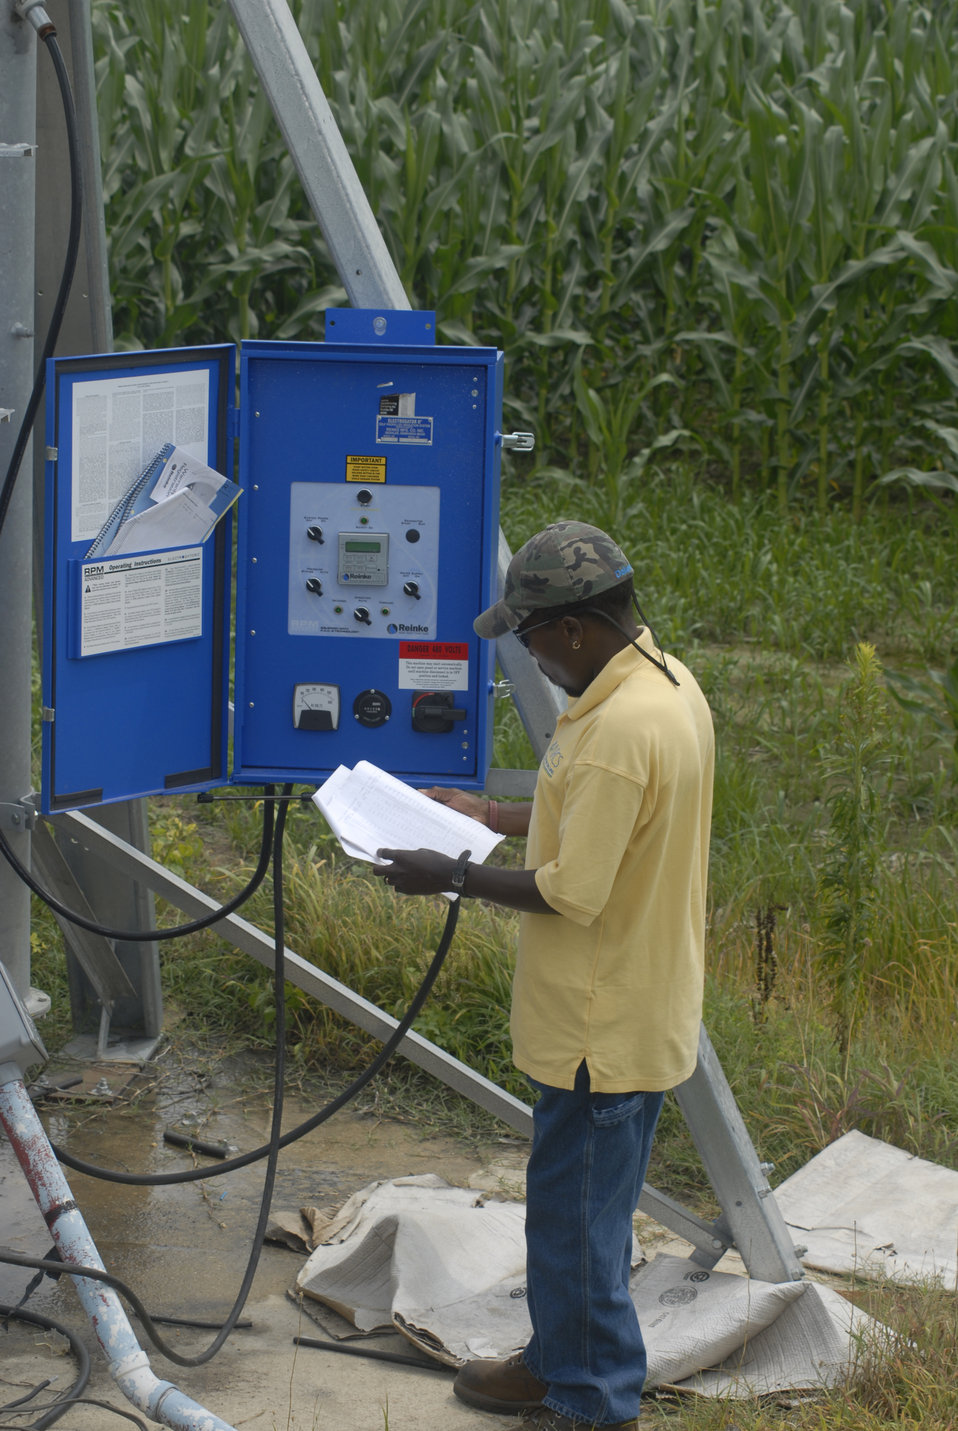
A U.S. Department of Agriculture (USDA) Natural Resources Conservation Service (NRCS) employee examines the control box of a center pivot irrigation system on a Delaware farm on July 8, 2008. As part of the Conservation Effects Assessment Project (CEAP) study of the Chesapeake Bay region by the USDA NRCS some farmers use a center pivot irrigation system. Center pivot irrigation is a method of crop irrigation in which equipment rotates around a pivot. This center pivot irrigation system is using Low Elevation Spray Application (LESA) system, which uses less water and reduces evaporation.